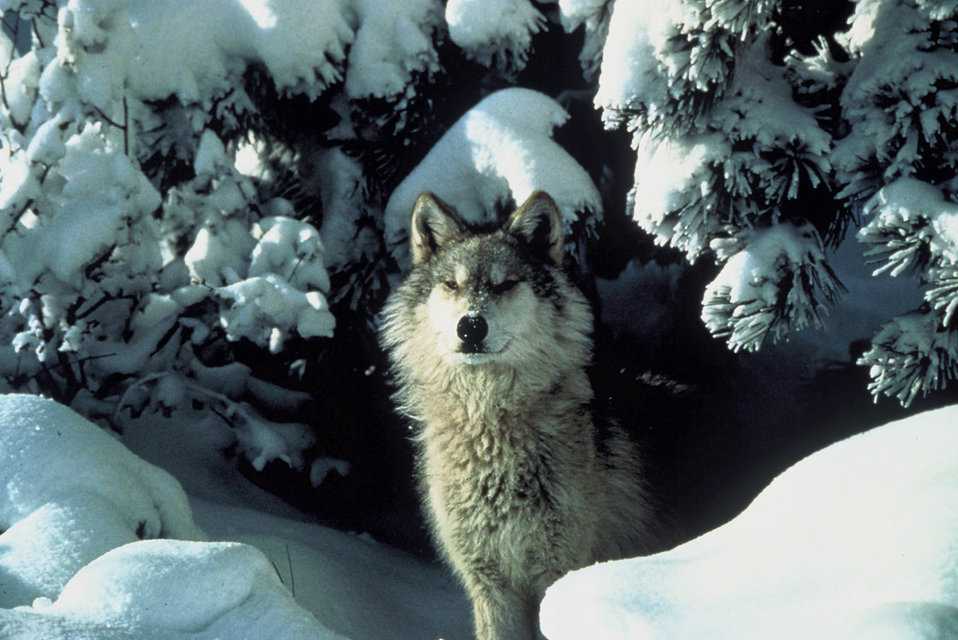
Gray Wolf